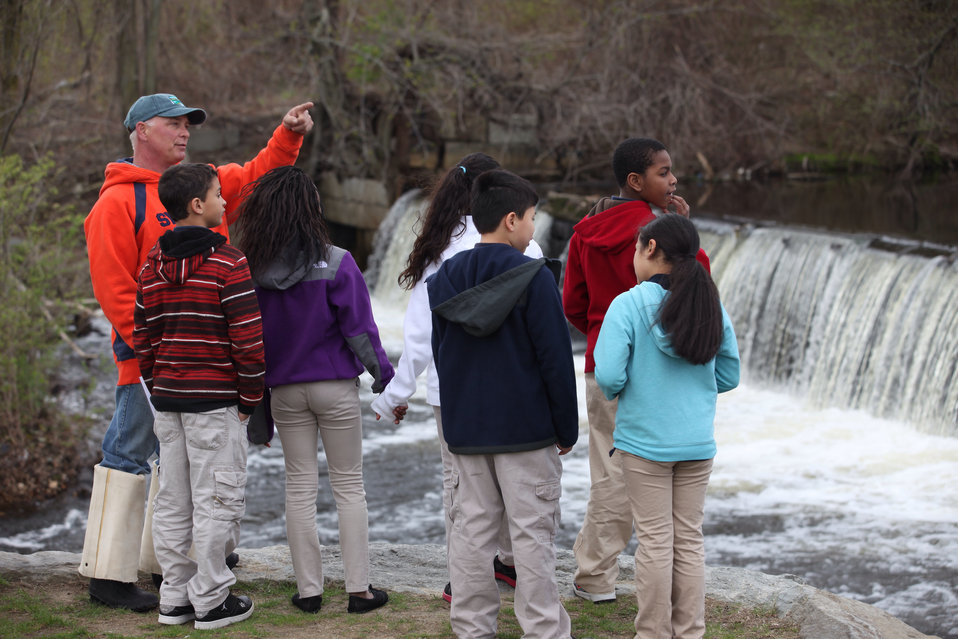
Students learn about fish passage

The Riverside Fish Ladder is located at the site and offers a great chance to teach students and local residents about fish and fish passage.